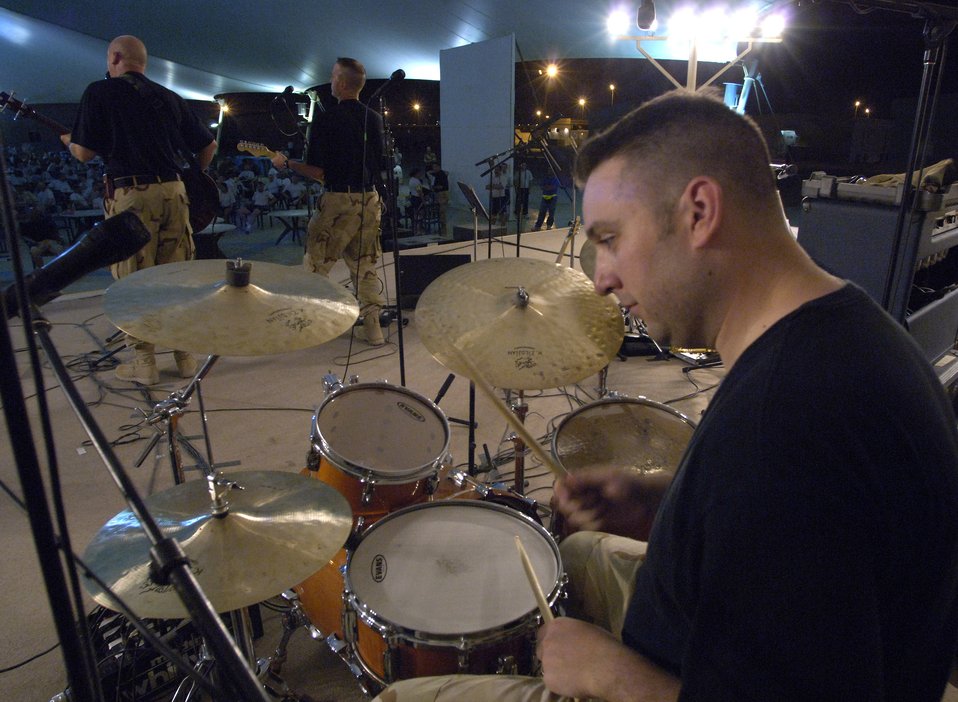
Expeditionary band performs for troops in Southwest Asia

Staff Sgt. Joe Filipek of the U.S. Central Air Forces Expeditionary Band